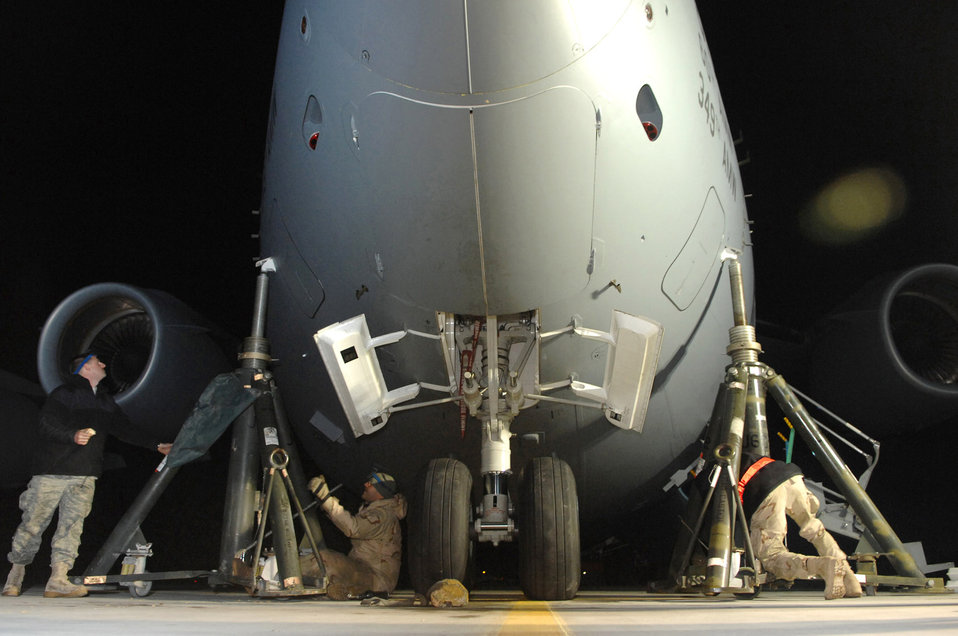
Up she goes...

Crew chiefs from the 721st Air Mobility Maintenance Group's Detachment 5 at Balad Air Base, Iraq, raise a C-17 Globemaster III Feb. 8 for a final operations test on the nose landing gear strut assembly.